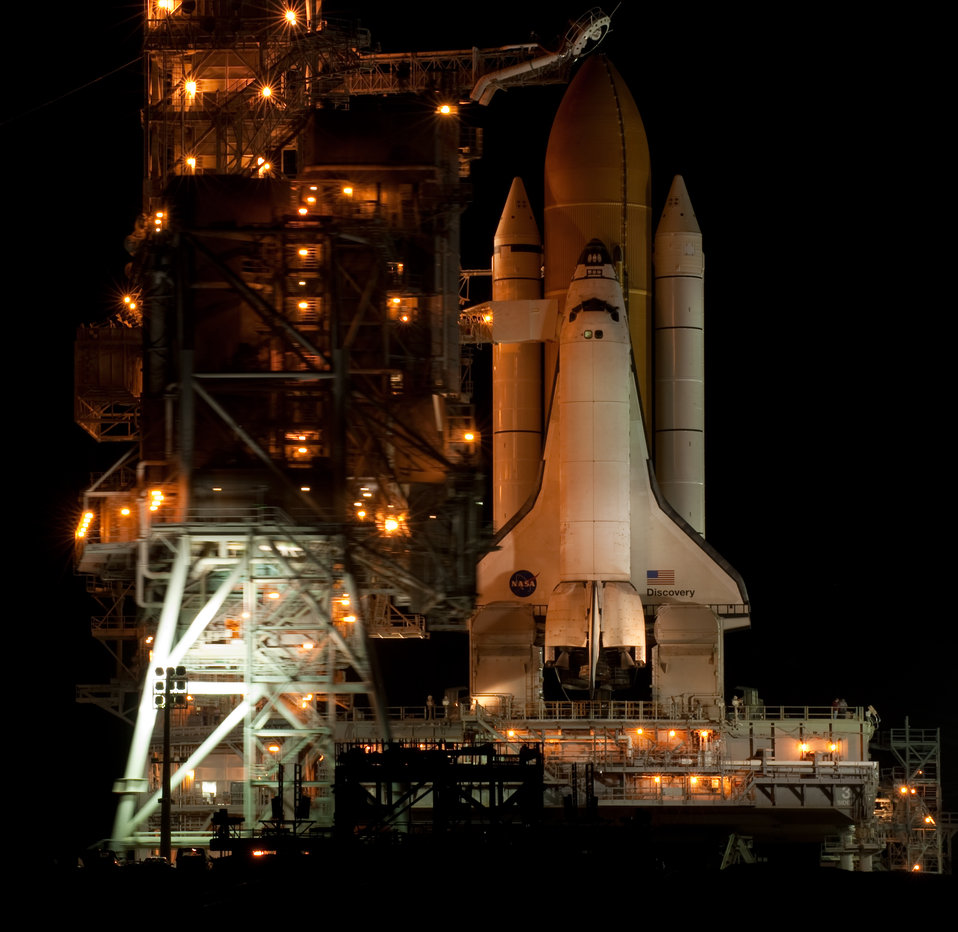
Final Discovery flight

The massive orbiter Discovery waits to blast into space Nov. 3, 2010, at the Kennedy Space Complex in Florida. The mission will be commanded by retired Air Force Col. Steve Lindsey. This final flight of Discovery will be piloted by Col. Eric Boe, and the lead mission specialist will Col. Alvin Drew.